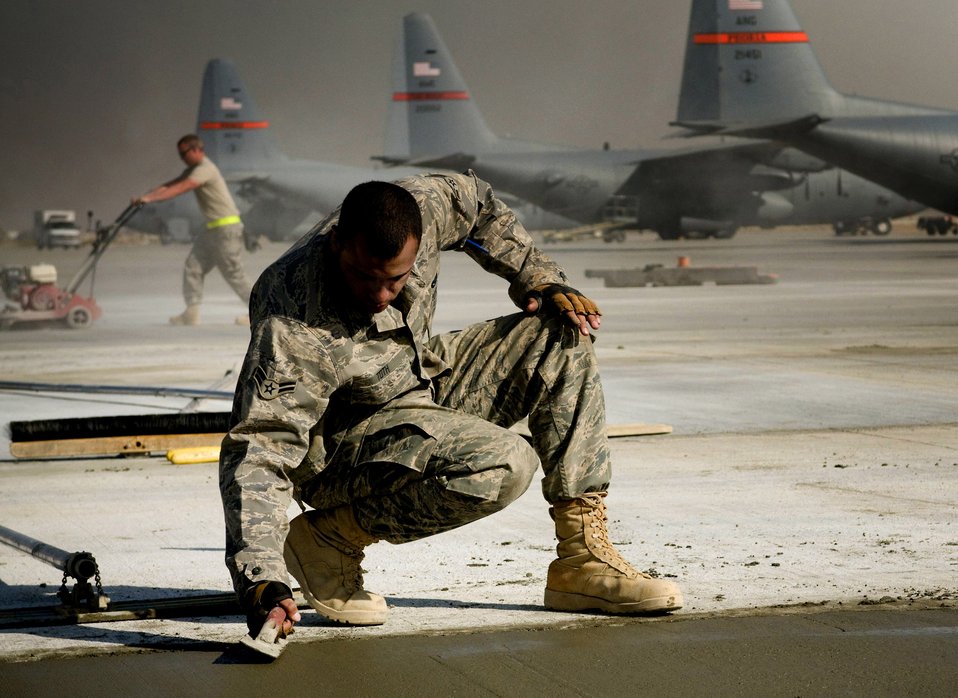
The mission must go on

Airman 1st Class Joshua Toth, a heavy equipment operator with the 455th Expeditionary Civil Engineer Squadron, smoothes wet concrete on Thanksgiving Day, Nov. 27, at Bagram Airfield, Afghanistan. Airman Toth is from Clayton, N.J.